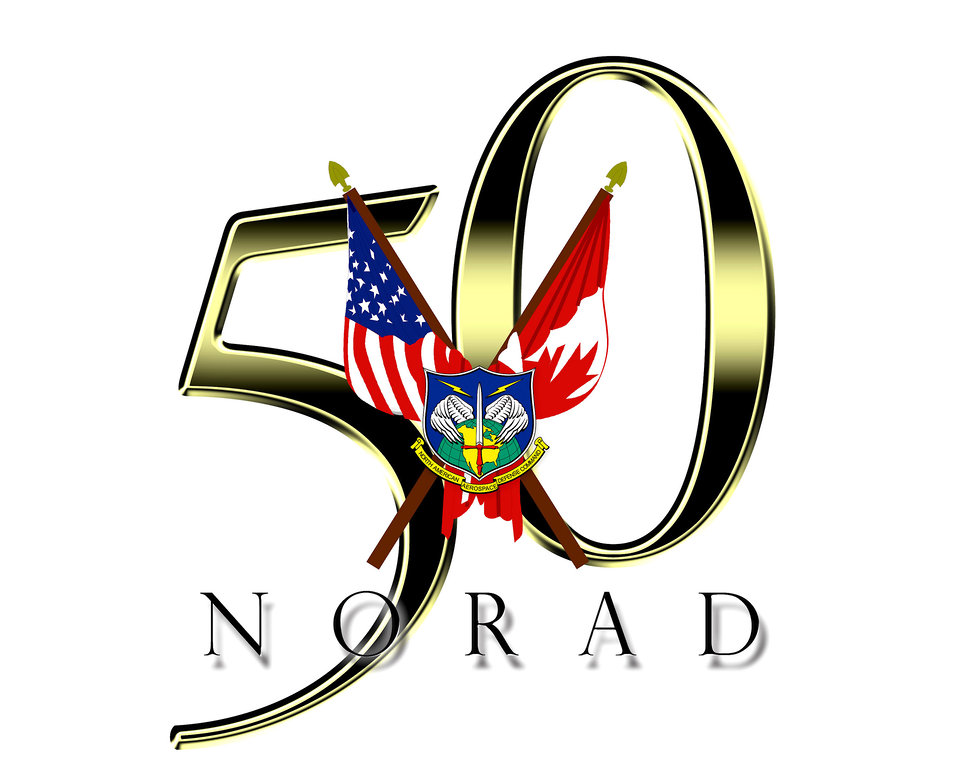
NORAD to celebrate 50th Anniversary

The North American Aerospace Defense Command is celebrating its 50th Anniversary. It was established on May 12, 1957, at Ent Air Force Base, Colo.